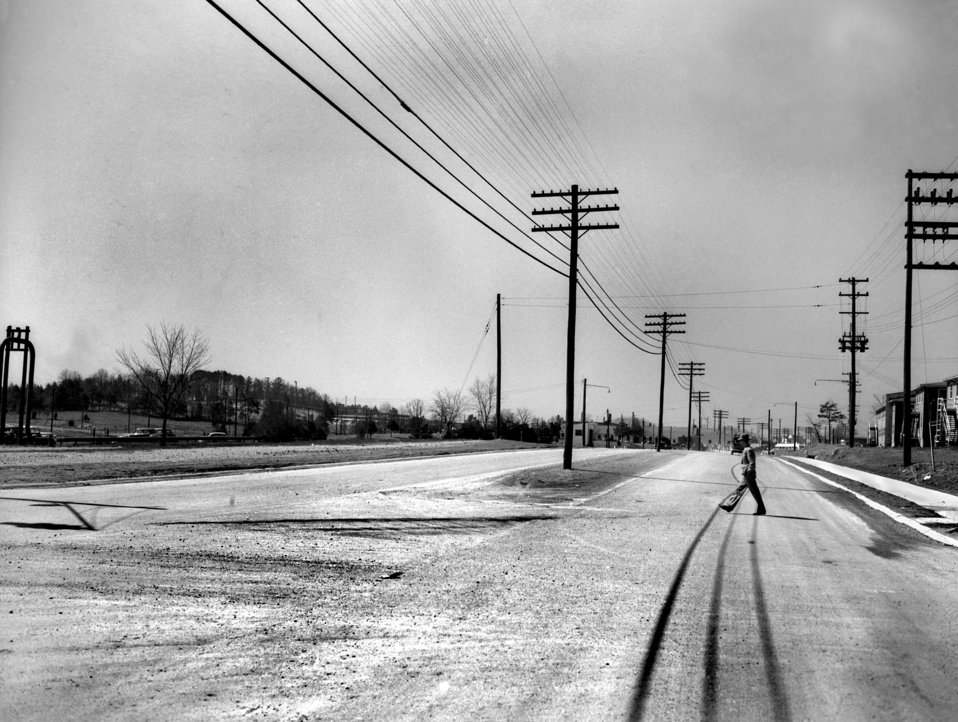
Georgia Ave and Oak Ridge Turnpike Oak Ridge

3342-15 DOE photo Ed westcott 3-17-1947 Oak Ridge Tennessee